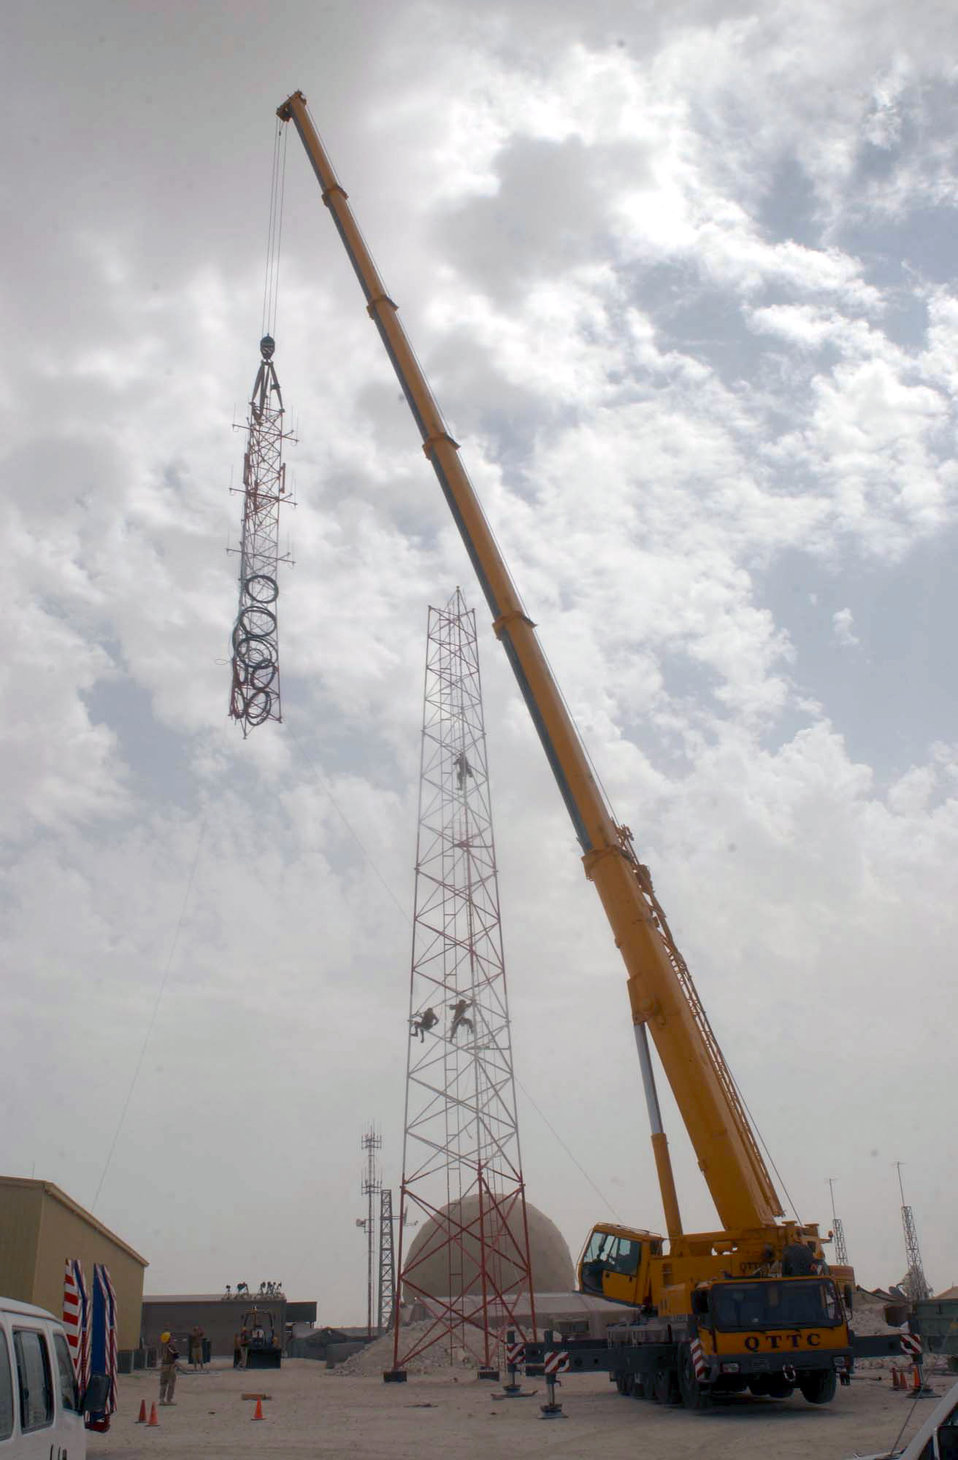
Erector set

OPERATION IRAQI FREEDOM -- The 379th Expeditionary Squadron erects a new tower in the Southwest Asia in support of Operation Iraqi Freedom March 23, 2003. Operation Iraqi Freedom is the multi-national coalition effort to liberate the Iraqi people, eliminate Iraq's weapons of mass destruction, and end the regime of Saddam Hussein.